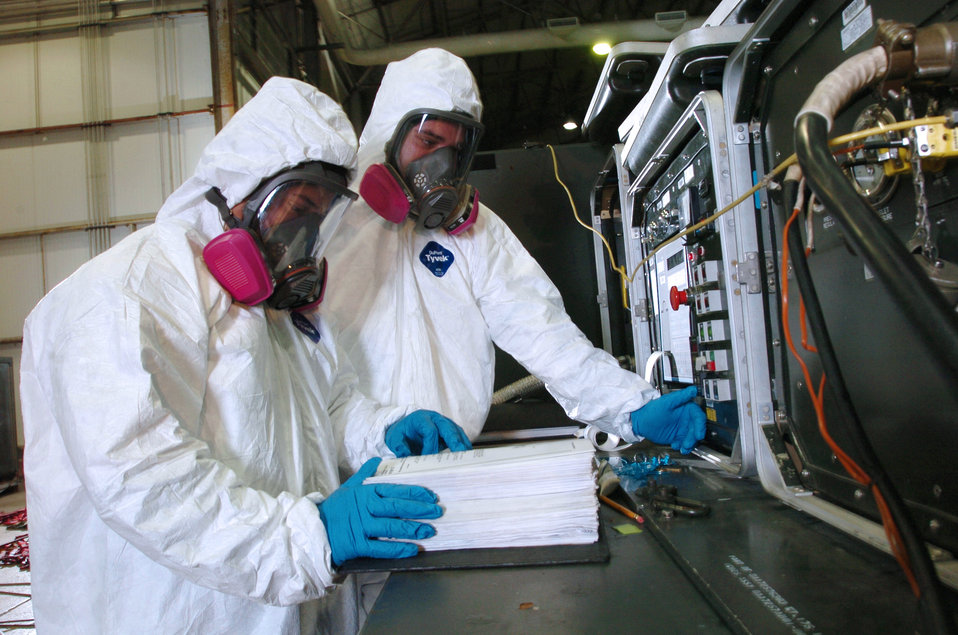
Missouri Airmen welcome challenge to keep B-2 safe

ANDERSEN AIR FORCE BASE, Guam -- Senior Airman Bruce Vaughn (foreground) and Staff Sgt. Jody Arbogast check a technical order while repairing the skin of a B-2 Spirit bomber deployed here. The Spirit's skin has to be kept in pristine condition to help maintain its stealth qualities. They wear gear to protect them from fumes caused by chemicals used to repair the aircraft. The Airmen are low observable technicians from the 509th Maintenance Squadron at Whiteman Air Force Base, Mo.